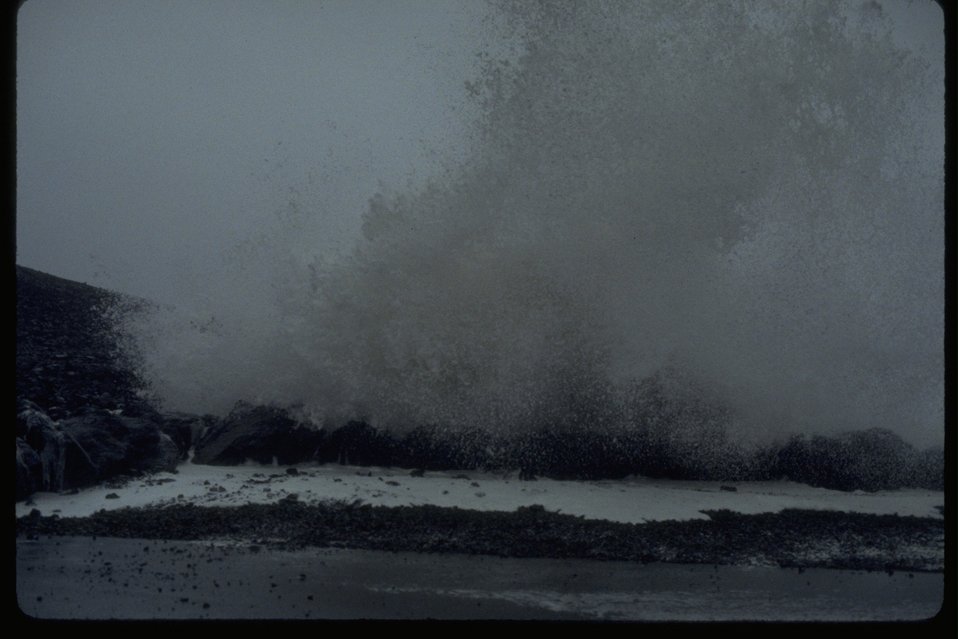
A large storm wave at Cobble Beach in the Yaquina Head ONA.